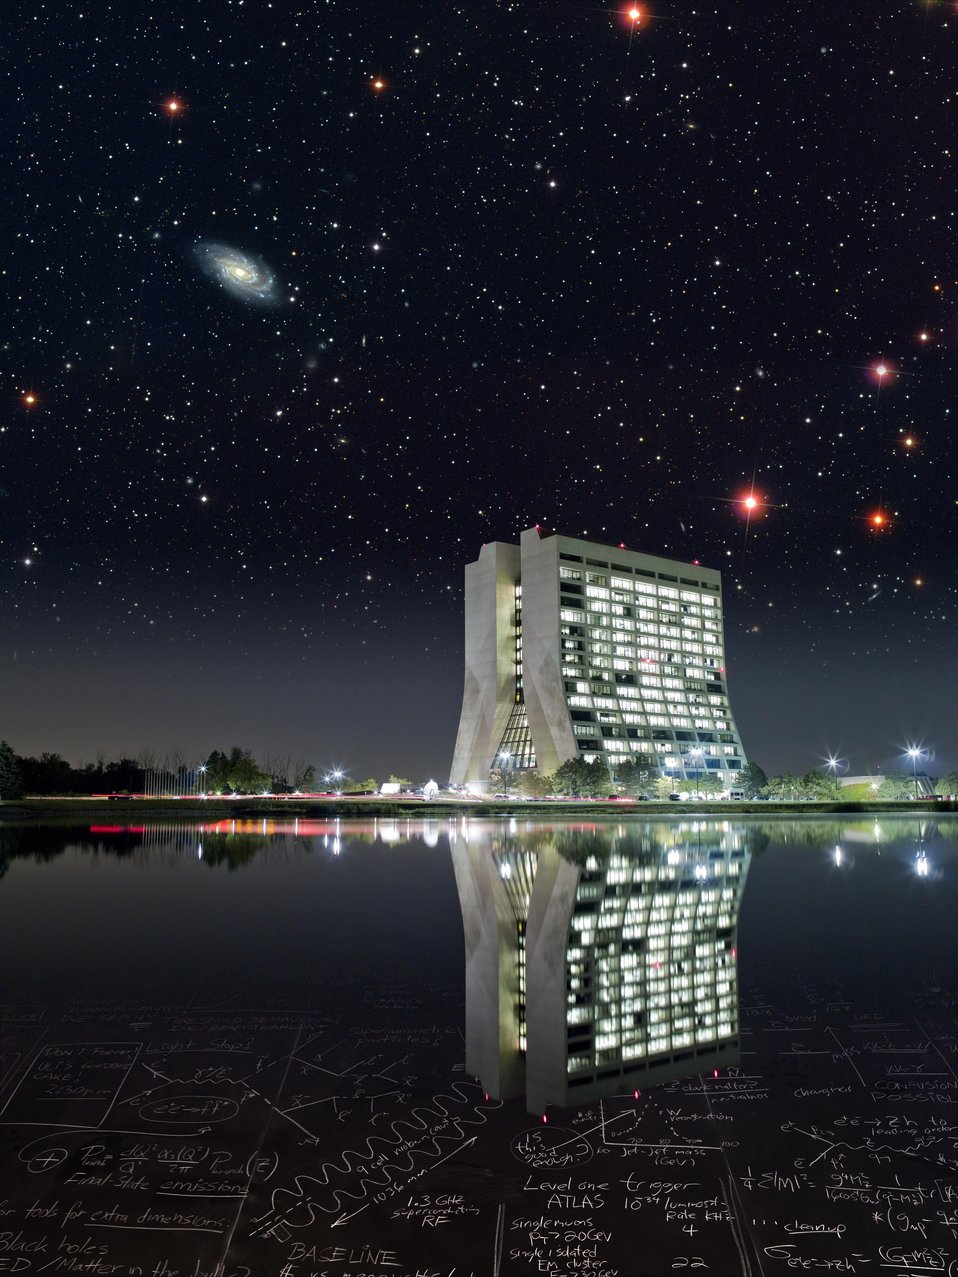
SYNERGY OF ASTROPHYSICS AND PARTICLE PHYSICS AT FERMI NATIONAL ACCELERATOR LABORATORY.